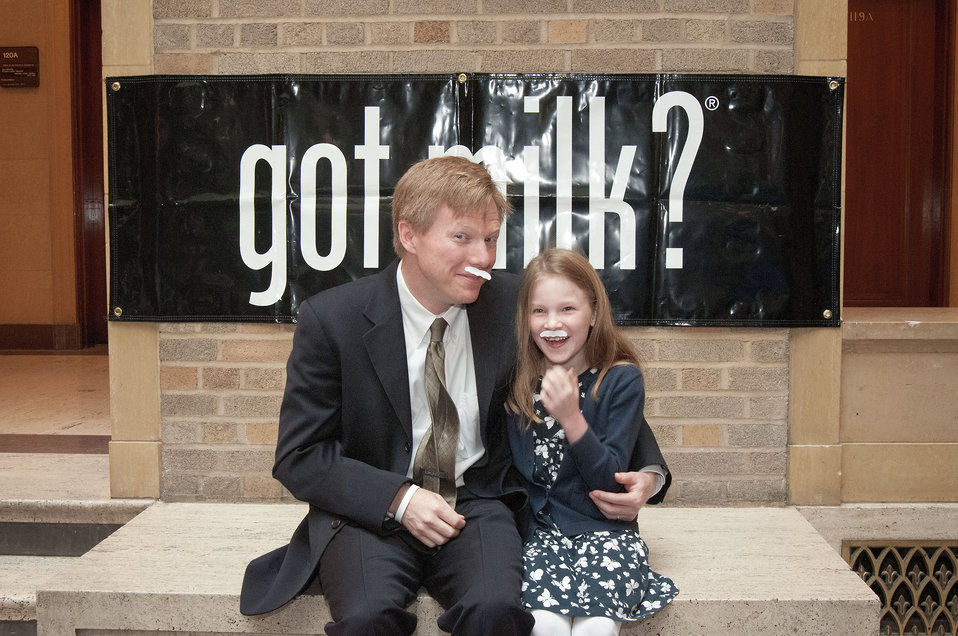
Center for Faith Based and Neighborhood Partnerships Director Max Finberg and his daughter Eliana model their milk mustaches at the “got milk?” booth at the United States Department of Agriculture, Take Our Daughters and Sons to Work and Earth Day in Washington, D. C. onThursday, April 26, 2012. The exhibits showcased USDA programs associated with soil and water conservation, alternative energy and bio-energy.